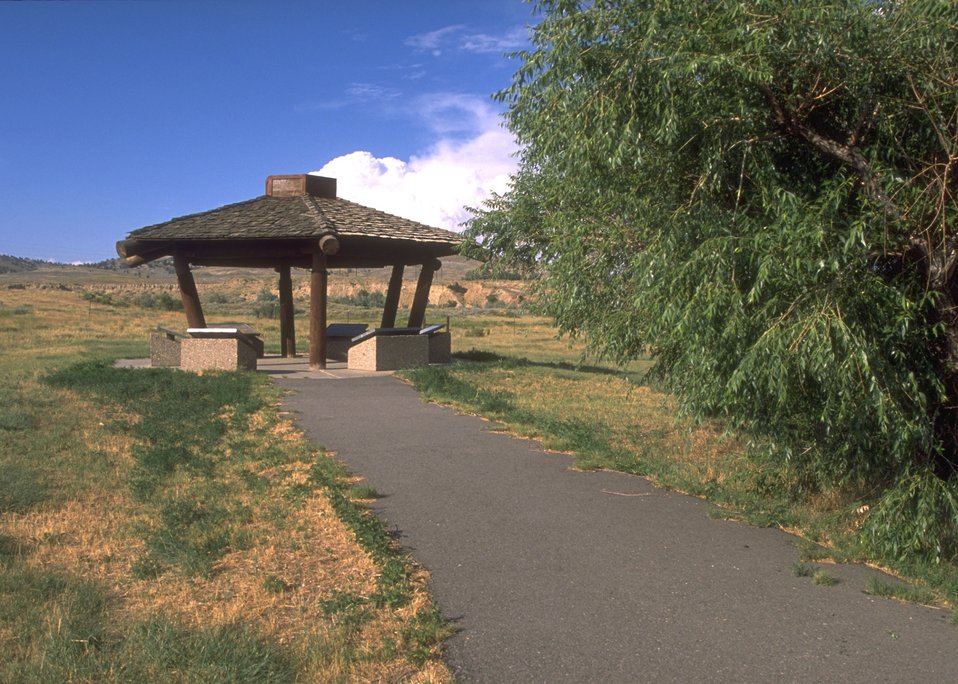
Development facility at Bessemer Bend on the Oregon Trail, North Platte River, Casper Field Office.